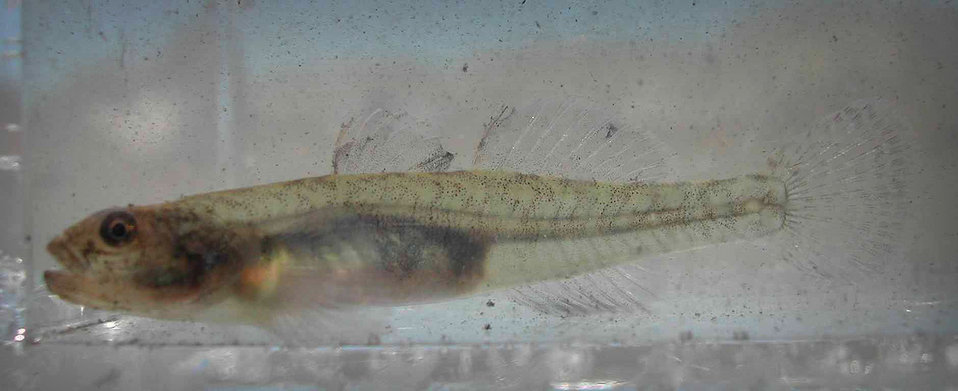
Tidewater Goby - USFWS